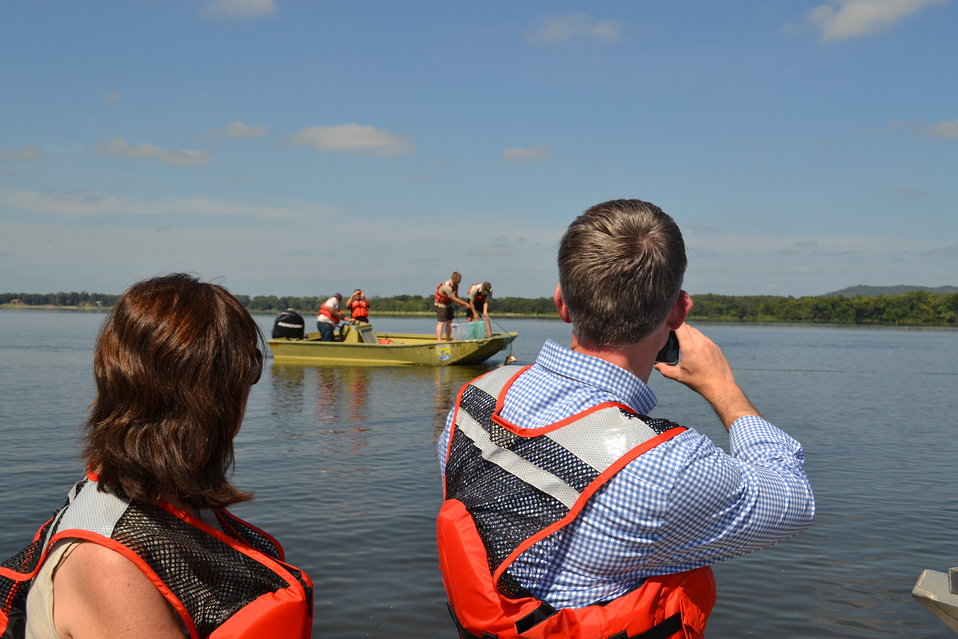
FWS staff retrieve gill net

Rep. Betty McCollum (D-Minn.) and her District Director, Josh Straka, look on as U.S. Fish and Wildlife staff pull up a gill net to see what fish they caught.